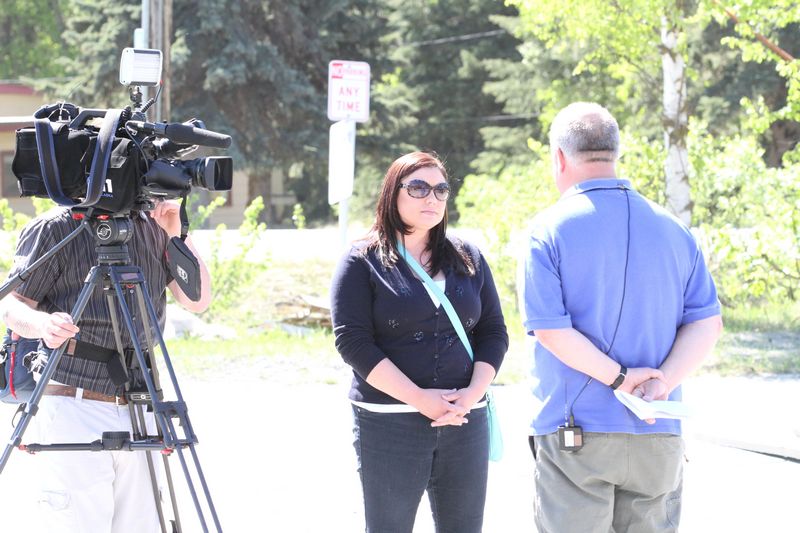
Press Conference on the polar bear holding module. USFWS/Rose Primmer